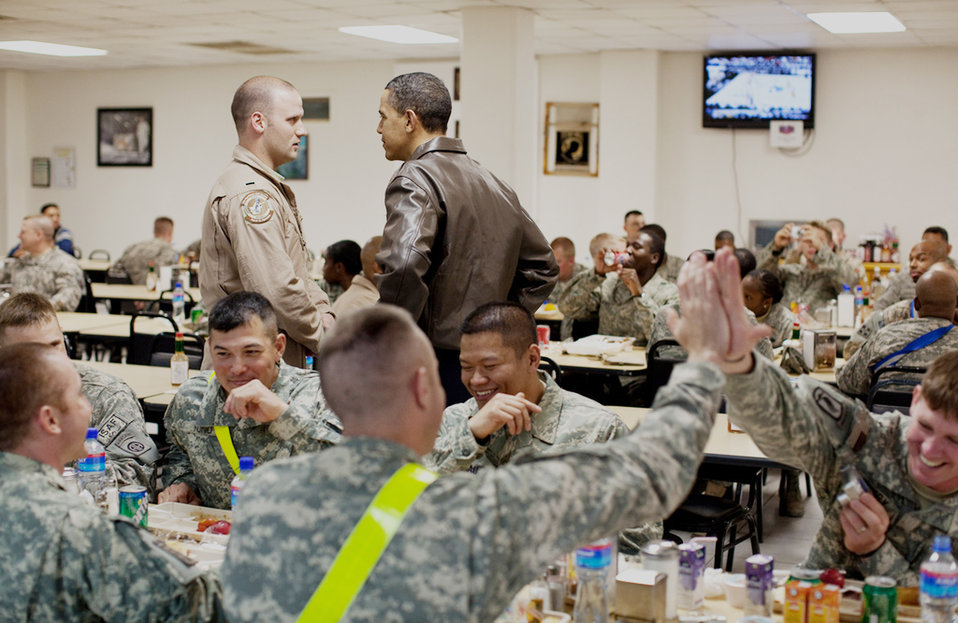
President Obama pays surprise visit to troops in Afghanistan

President Barack Obama greets U.S. troops at a mess hall March 28, 2010, at Bagram Airfield, Afghanistan.